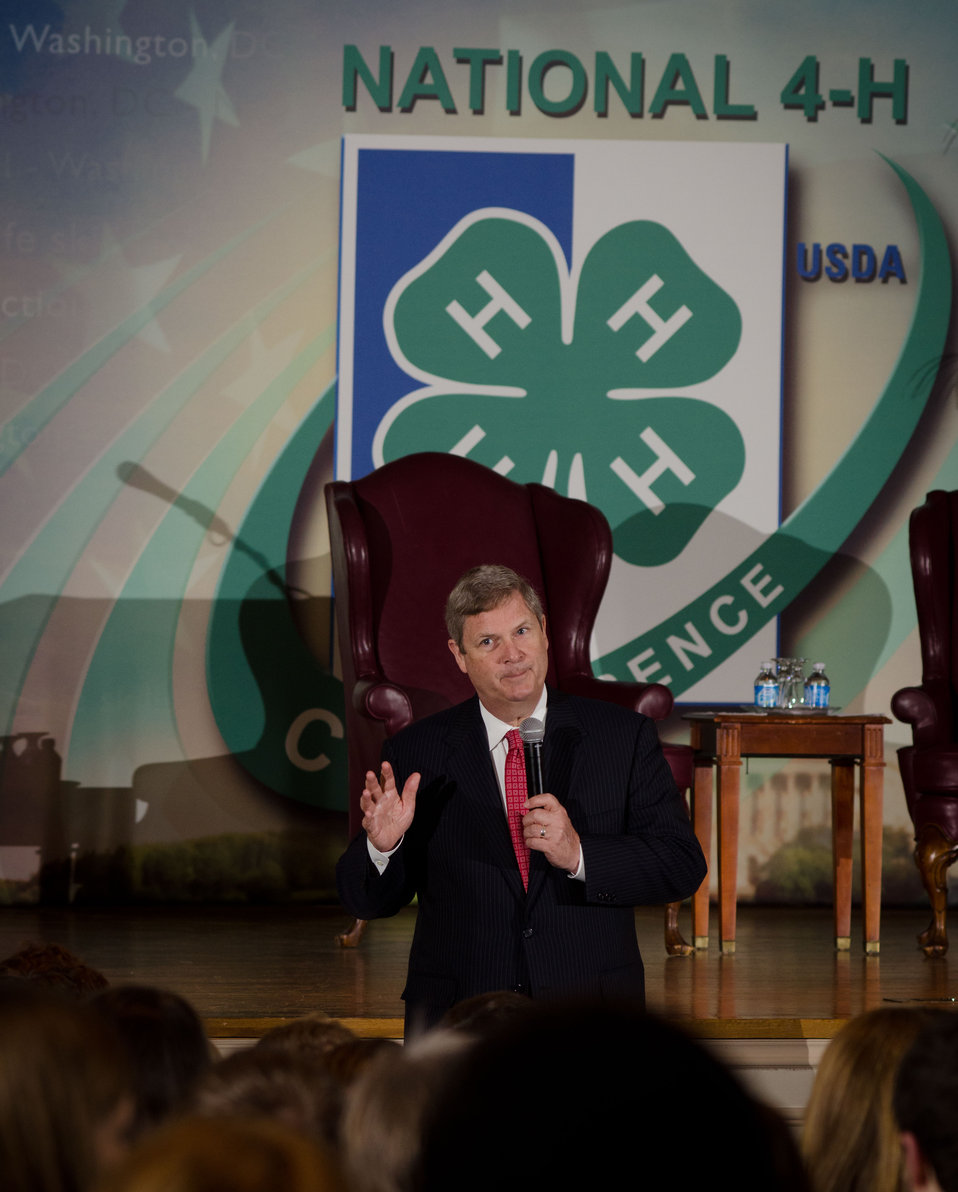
Agriculture Secretary Tom Vilsack speaks with 4-H members at the National 4-H Youth Center in Chevy Chase, MD, on Monday, March 26, 2012. 'For almost 100 years, USDA and 4-H have partnered to produce some of our nation's best and brightest, including farmers and ranchers who have supported the American economy and put food on our tables,' Vilsack said. 'You all are tomorrow's leaders. We need you to think big, innovate and help tackle the important challenges standing between us, a stronger middle class and a stronger nation.'